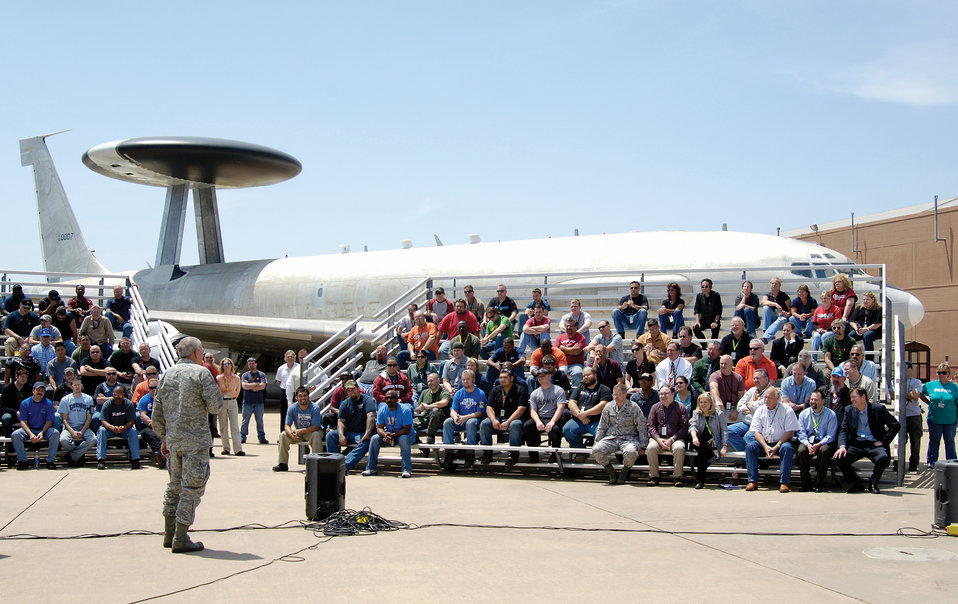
AWACS block 40/45 upgrade

Maj. Gen. David Gillett speaks to ALC and Boeing personnel during a ceremony May 17, 2011, at Tinker Air Force Base, Okla. The ceremony recognized the efforts of all those responsible for the early completion of the physical install of upgrades for the first aircraft in the fleetwide Block 40/45 E-3 modification program. General Gillet is the commander of the Oklahoma City Air Logistics Center.